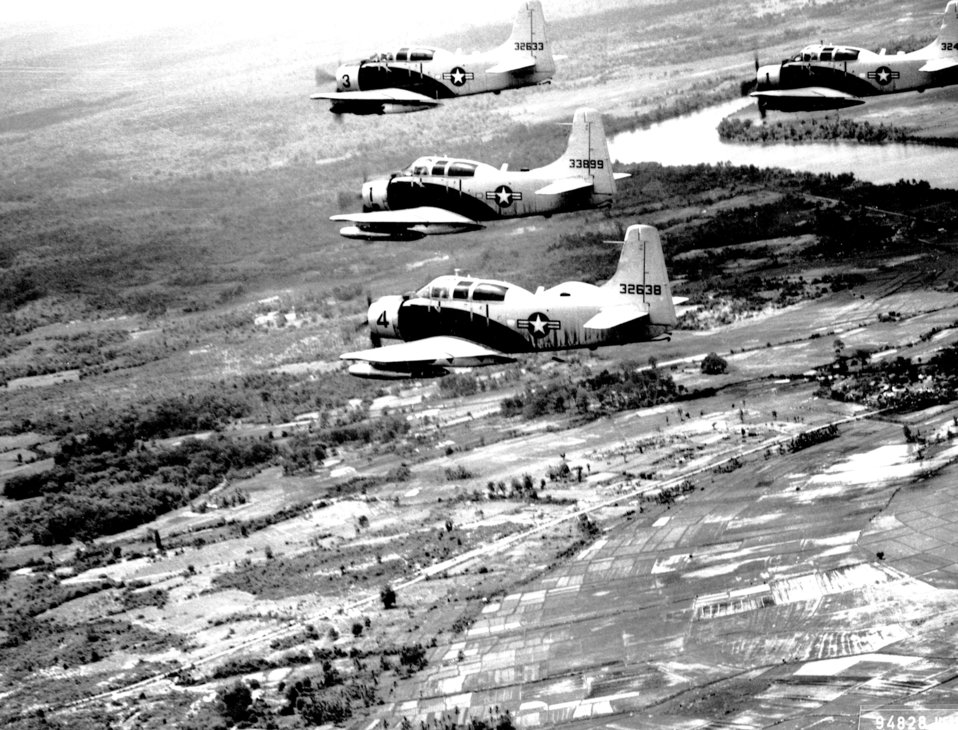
A-1E Skyraider

1960s -- A-1E Skyraider aircraft fly in formation over South Vietnam on way to target on June 25, 1965. The aircraft are assigned to the 34th Tactical Group, based at Bien Hoa, South Vietnam.